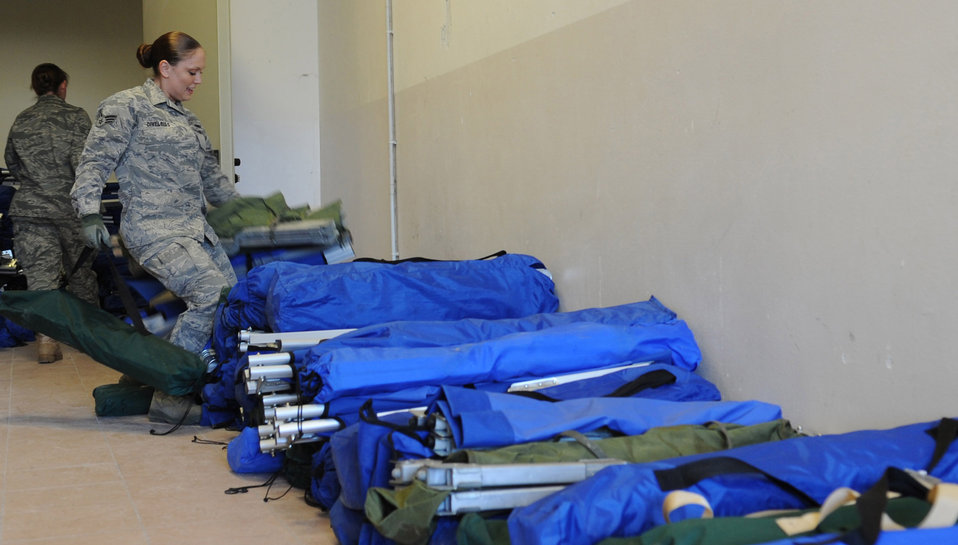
Odyessey Dawn

Senior Airmen Joy DiVelbiss, 31st Force Support Squadron command support section, moves cots out of a storage room for incoming personnel arriving at Aviano Air Base, Italy, in support of Operation Odyssey Dawn March 20. Joint Task Force Odyssey Dawn is the U.S. Africa Command task force established to support the larger international response to the unrest in Libya. A broad coalition of nations are partnering to enforce U.N. Security Council Resolution (UNSCR) 1973, which authorizes all necessary means to protect civilians in Libya under threat of attack by Qadhafi regime forces. JTF Odyssey Dawn is commanded by Admiral Samuel J. Locklear, III.